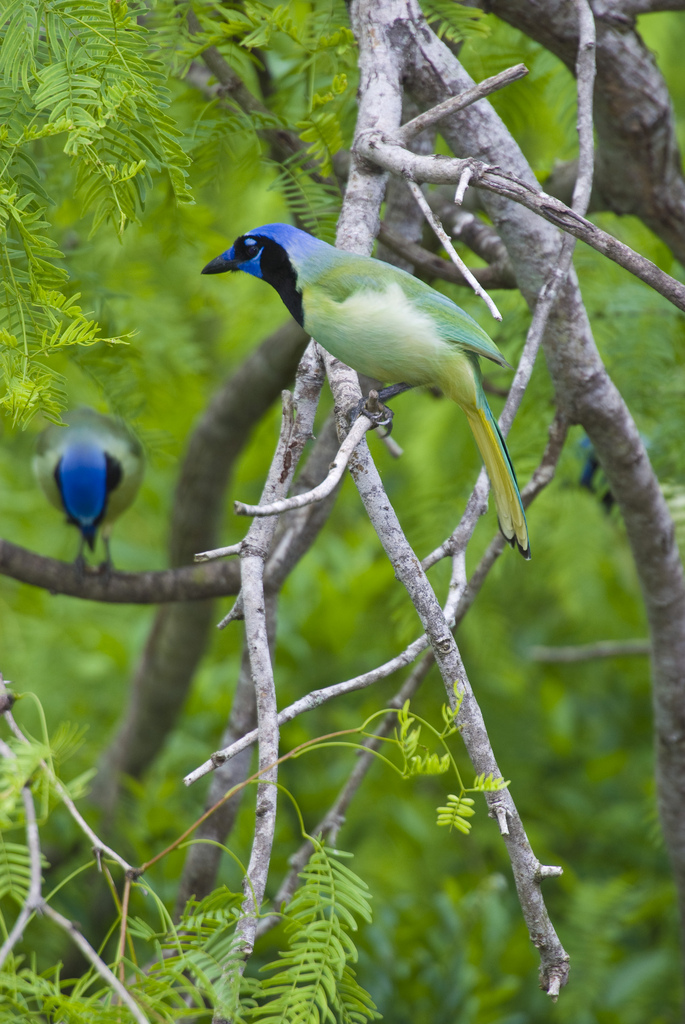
green jays

Laguna Atascosa National Wildlife Refuge, TX